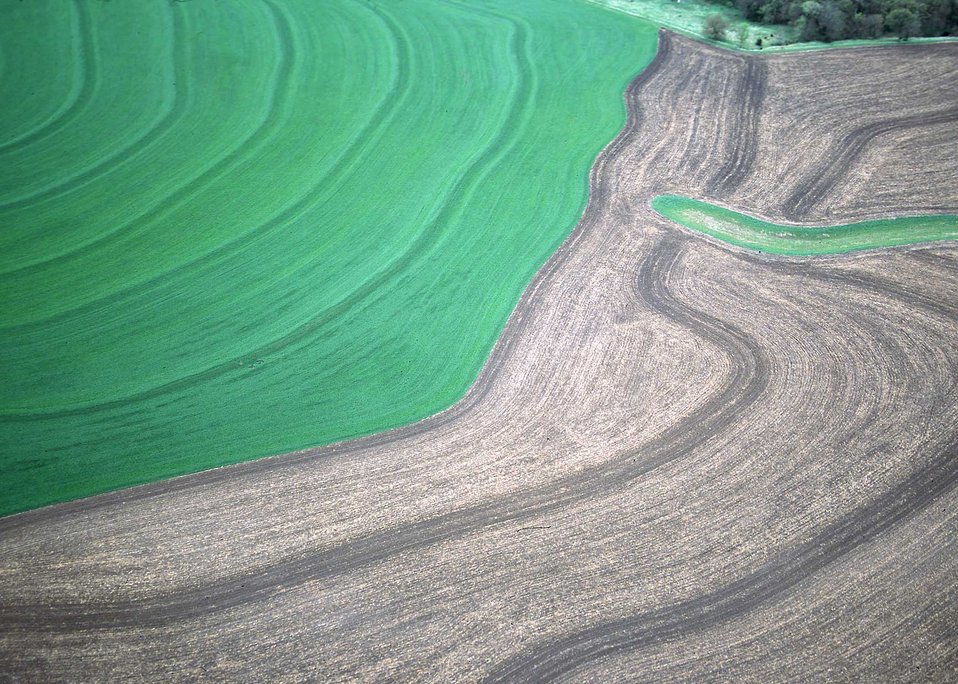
Aerial view on contour terraces and grassed waterways for erosion control. Kansas.